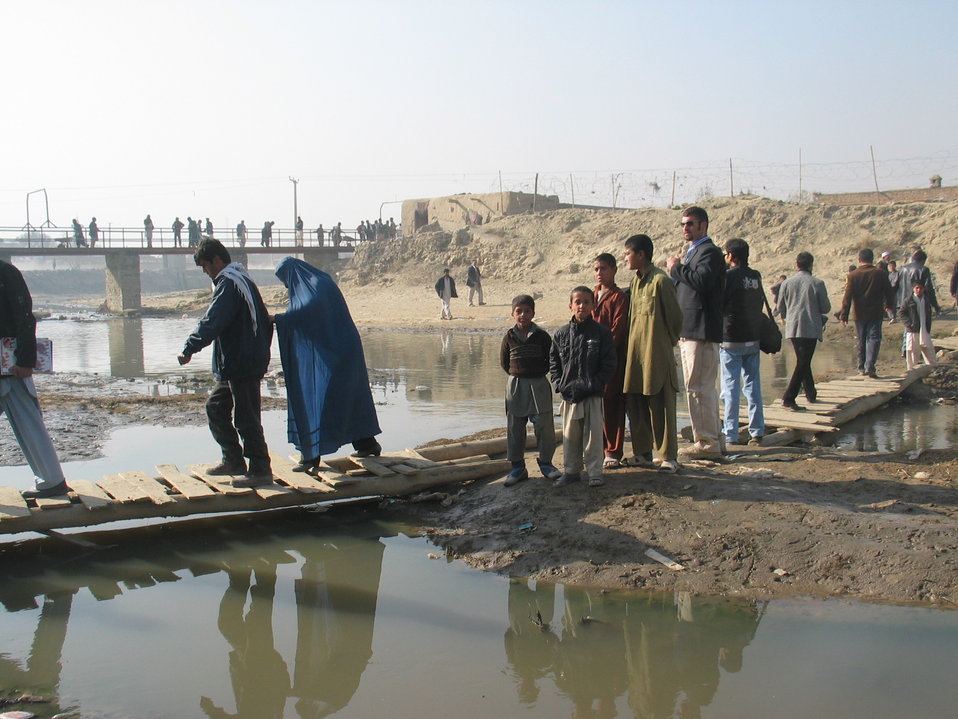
Kabul River Bridge Renovation, December 3, 2010